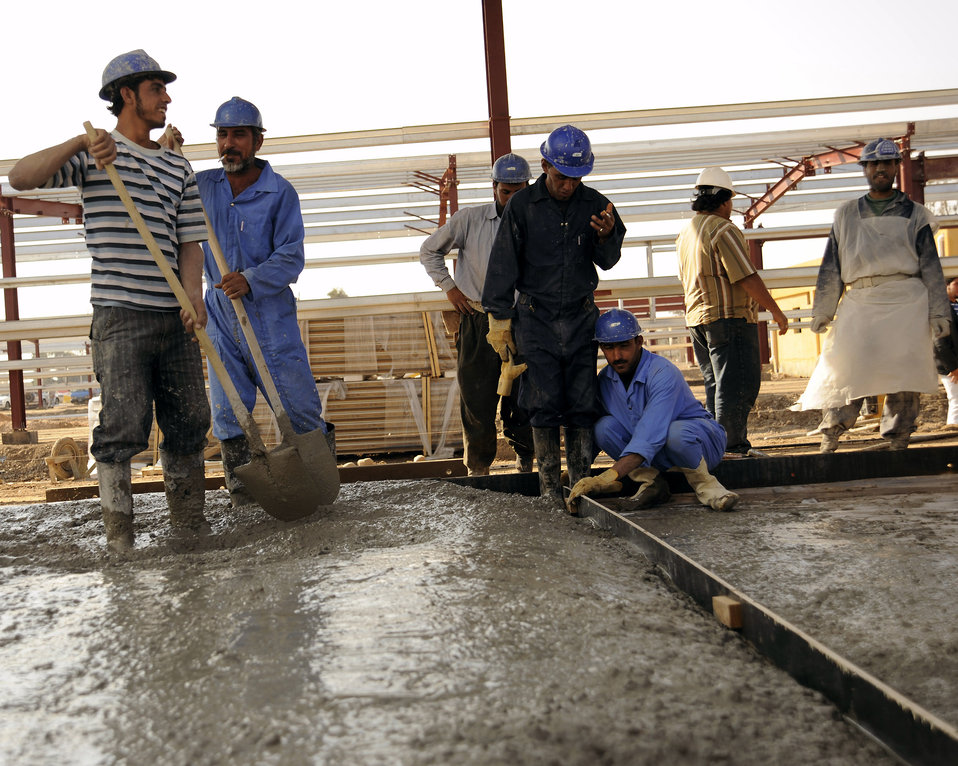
Airmen show Iraqi army leaders base operations

Iraqi construction workers pour concrete during the building of barracks Nov. 24 at Taji Military Base, Iraq.